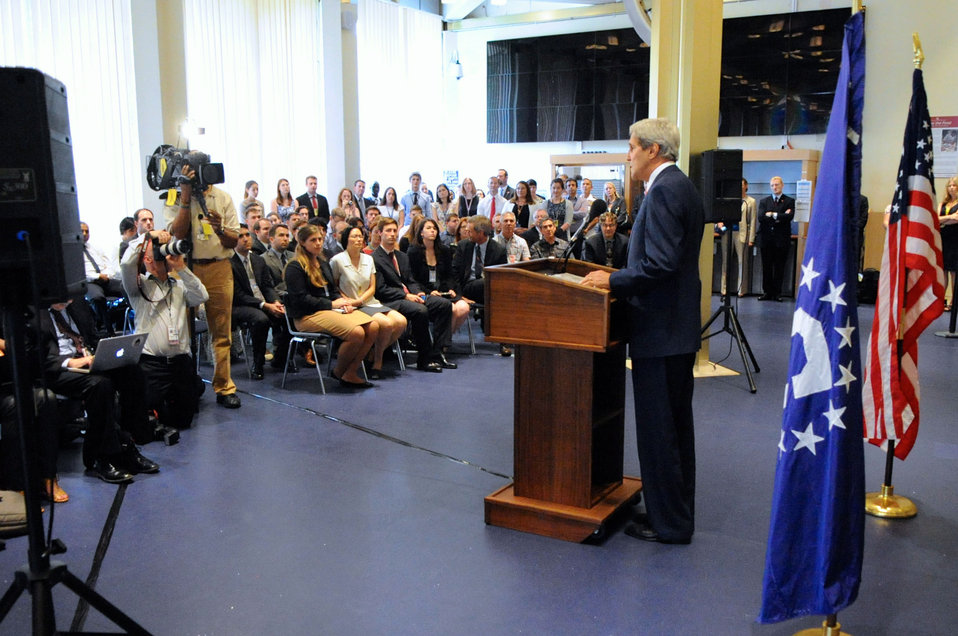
Secretary Kerry Announces Same-Sex Couple Visa Change

U.S. Secretary of State John Kerry addresses employees at the U.S. Embassy in London, United Kingdom, on August 2, 2013, to announce that the U.S. Department of State would immediately start granting visas to same-sex couples just as it does for opposite-sex couples, after the U.S. Supreme Court overturned the Defense of Marriage Act.